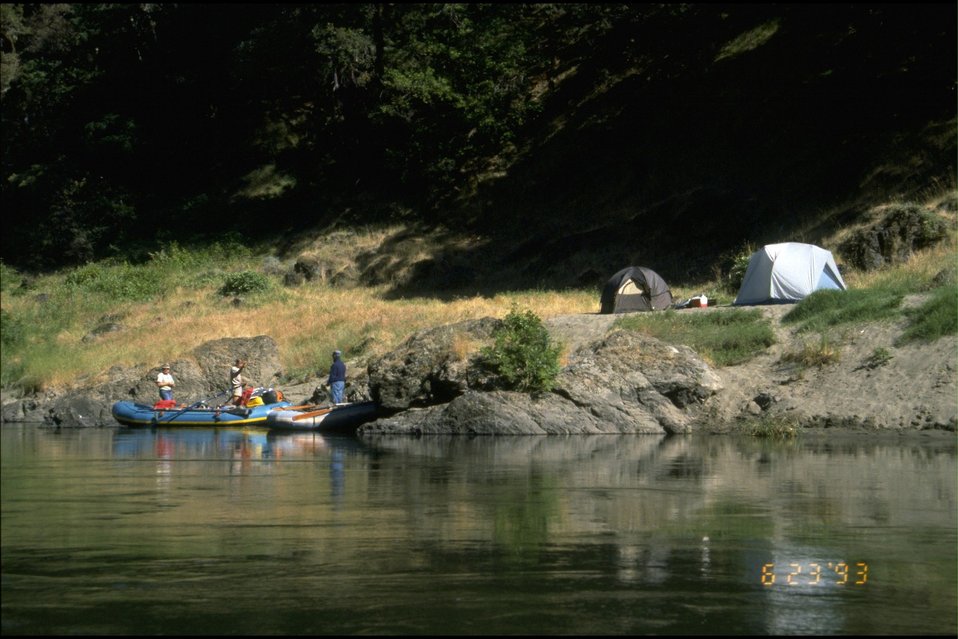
Rogue River - Wild section. River camping.